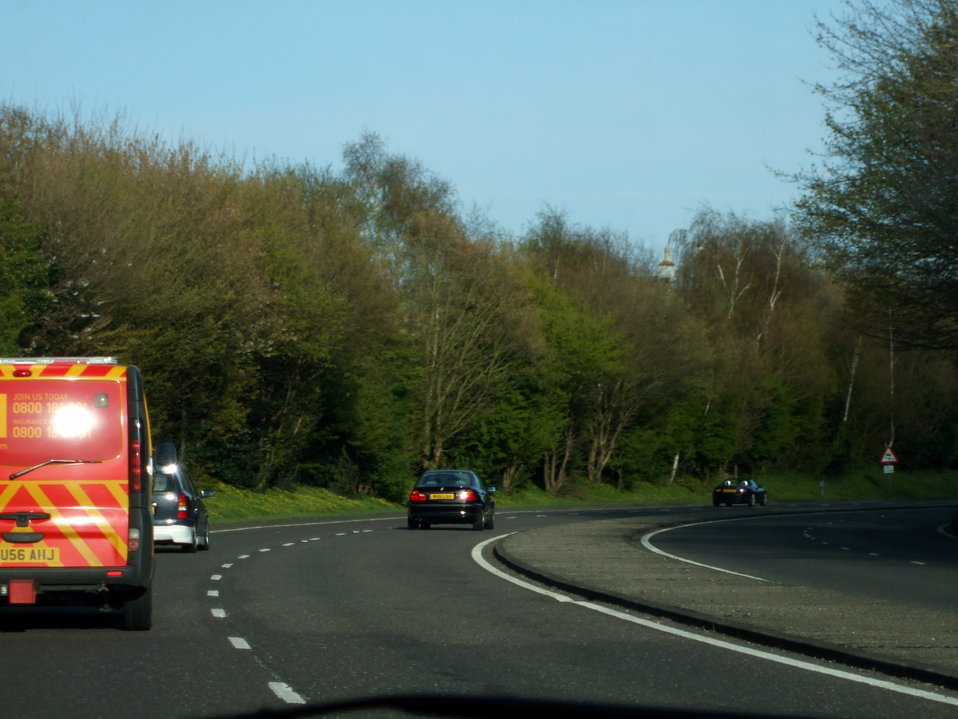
The A259 road in Bexhill-On-Sea